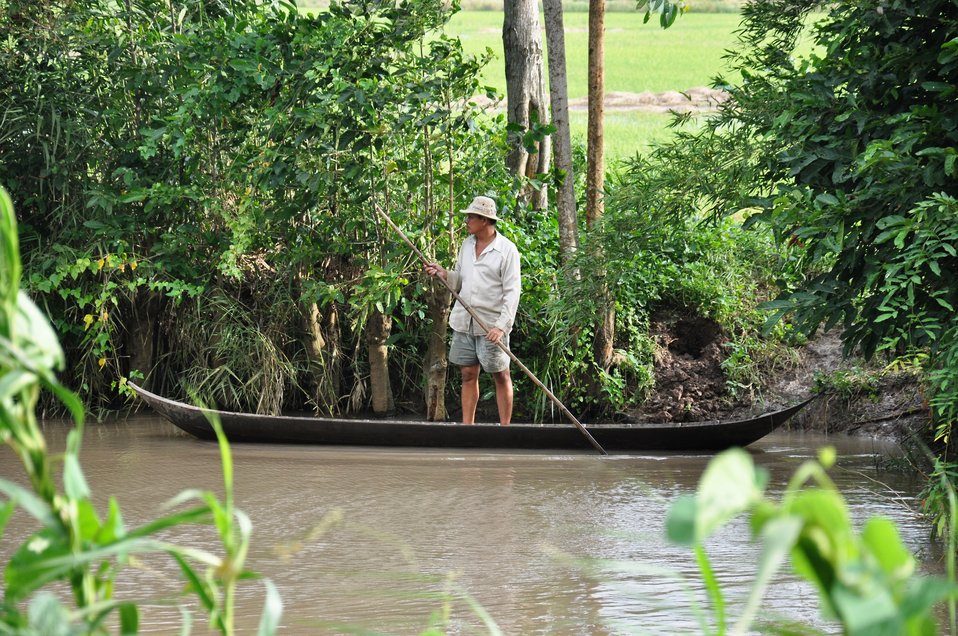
A farmer plies the waters of the Mekong Delta in southern Vietnam